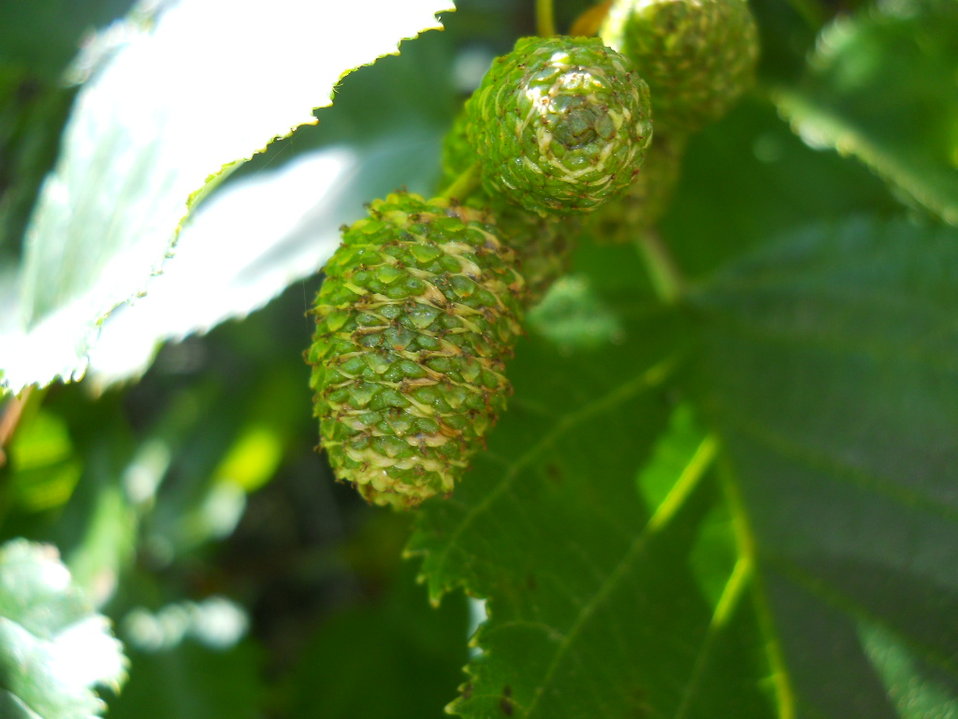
Immature Spruce Cones

Credit: USFWS
Photo taken by a Salmon Camp participant during a nature photography activity.

Source and Contact: Kodiak National Wildlife Refuge